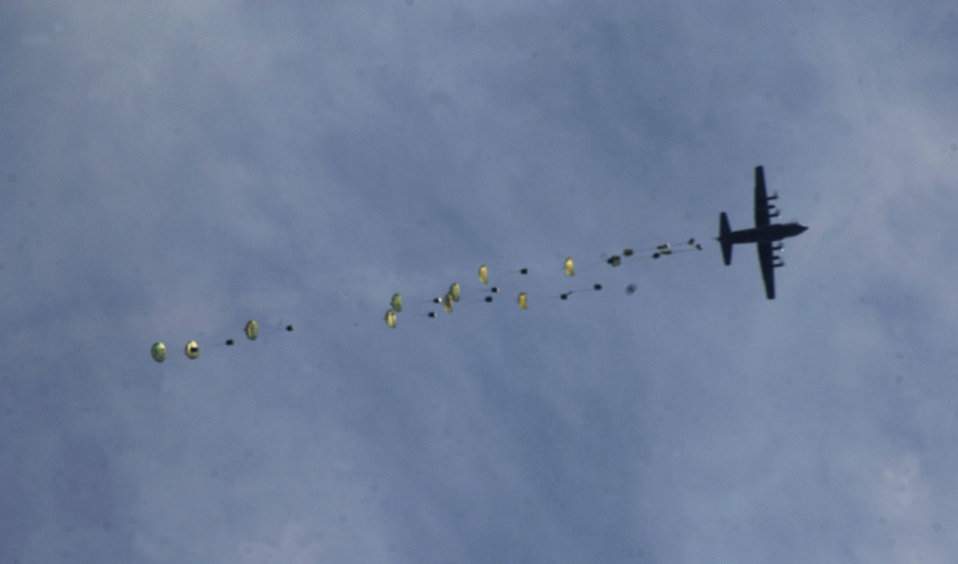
Airpower Summary

A C-130 Hercules airdrops humanitarian assistance supplies in Paroons, Afghanistan, May 3. Coalition C-130s and C-17 Globemaster IIIs flew 147 sorties and delivered approximately 480 tons of cargo May 26.